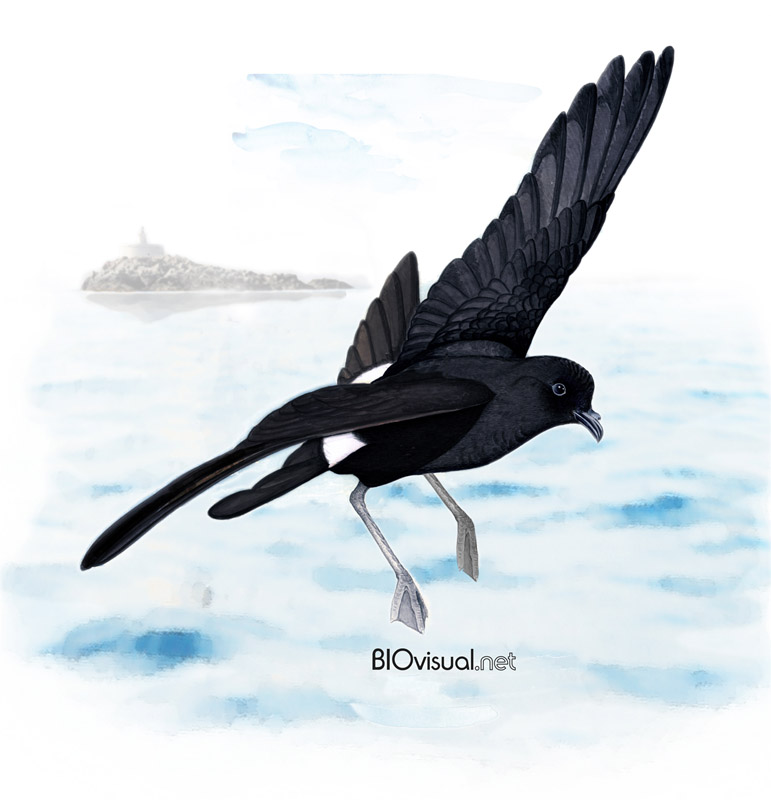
Español: Imagen acuarela de paiño